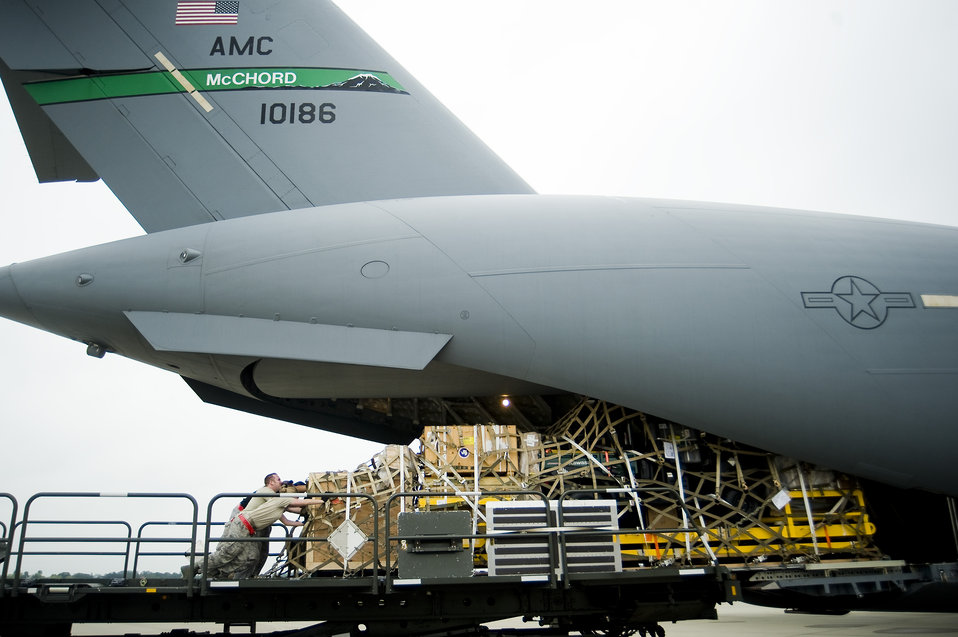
McChord Airmen head for 'the ice' as Operation Deep Freeze season kicks off

Airmen load cargo onto a C-17 Globemaster III prior to departure for a mission in support of Operation Deep Freeze to Antarctica Sept. 24, 2009, at McChord Air Force Base, Wash.